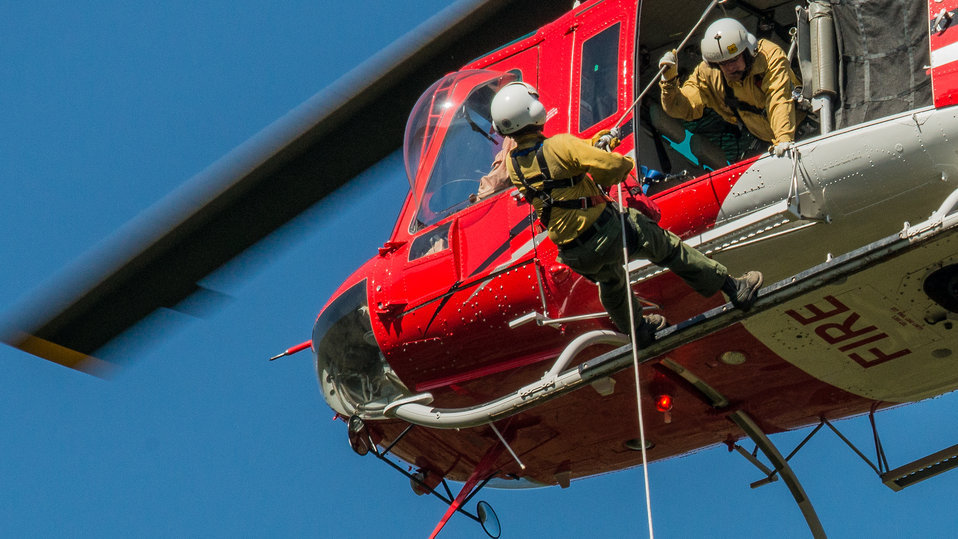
A spotter makes final checks and steadies the rope, before a veteran wildland firefighter rappeller pushes away from Heligroup Fire's Bell 205A-1 helicopter hovering over a rappeller landing zone in the Perreau Creek area at the U.S. Department of Agriculture (USDA) U.S. Forest Service (USFS) National Helicopter Rappel Program’s Rappel Academy at Salmon Air Base in Salmon, ID on Wednesday, May 14, 2014. From May 12, 2014, 72 veteran rappellers from all over the nation, 30 support staff, and three helicopters with flight crews attend the training at Salmon Air Base. Participants will rappel into the Perreau Creek area. The annual training is delivered in accordance with the National Rappel Operations Guide; strengthen leadership, teamwork, and communications within the rappel community, and produces quality aerial delivered firefighters for use in fire and aviation operations. The USDA Forest Service National Helicopter Rappel Program’s primary mission is initial attack. Rappel crews may be utilized for large fire support, all hazard incident operations, and resource management objectives.